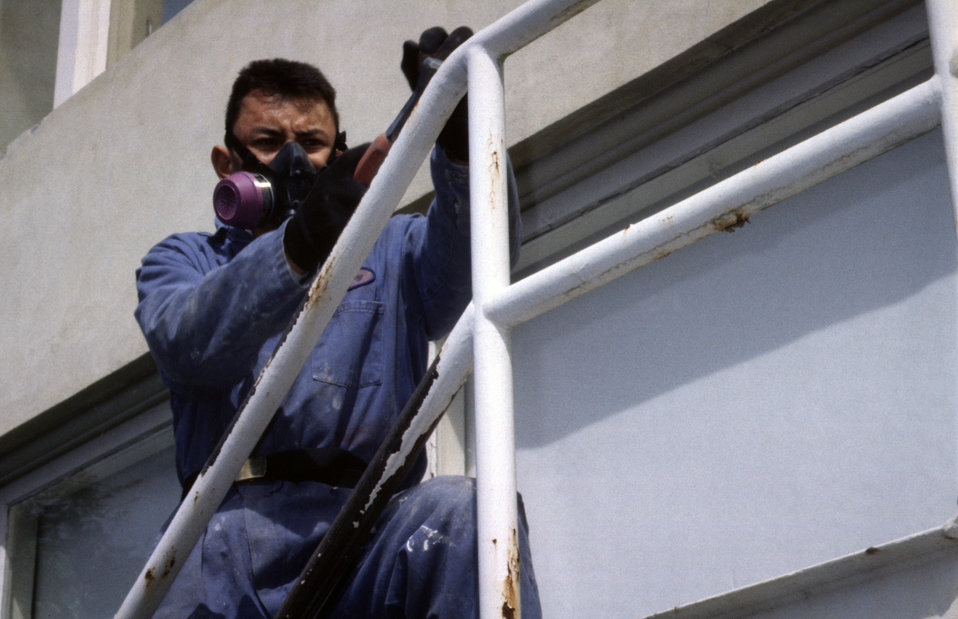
This worker was performing a dry manual scraping in a 1999 exercise, demonstrating an exterior renovation method that was typically used on residences where lead-based paint was present. This was a high-exposure method.